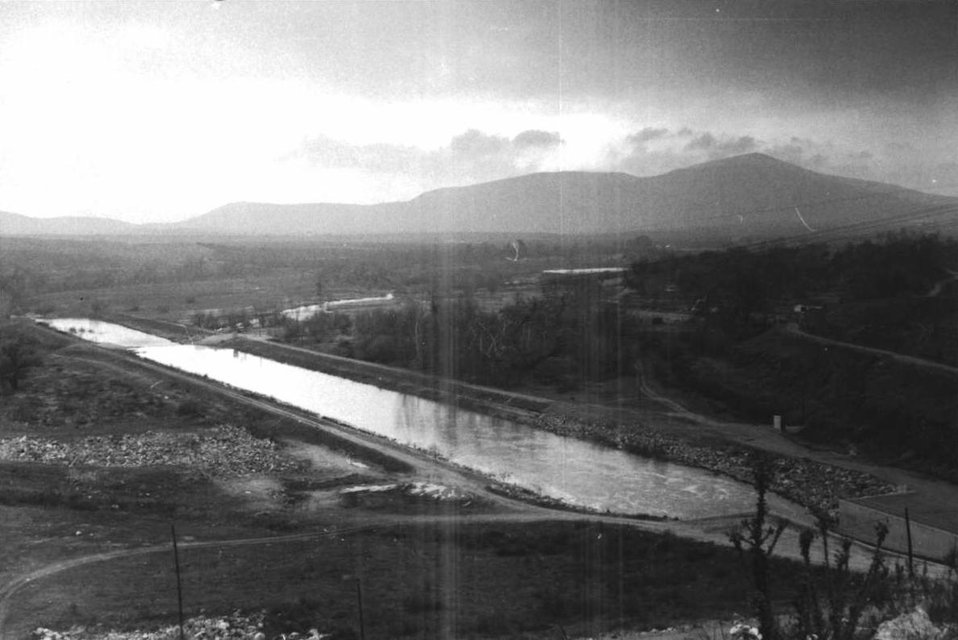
Success Dam

A historical view looking west of the outlet at Success Dam, located near Porterville, Calif., Dec. 2, 1966. The U.S. Army Corps of Engineers Sacramento District completed construction of Success Dam in 1961 and the reservoir provides flood risk management, water storage and recreational benefits to the local area.